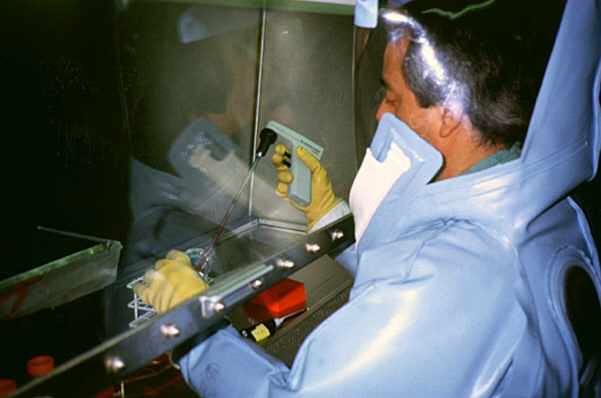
CDC scientist conducts laboratory research in the Biosafety Level 4 laboratory, Atlanta, GA.